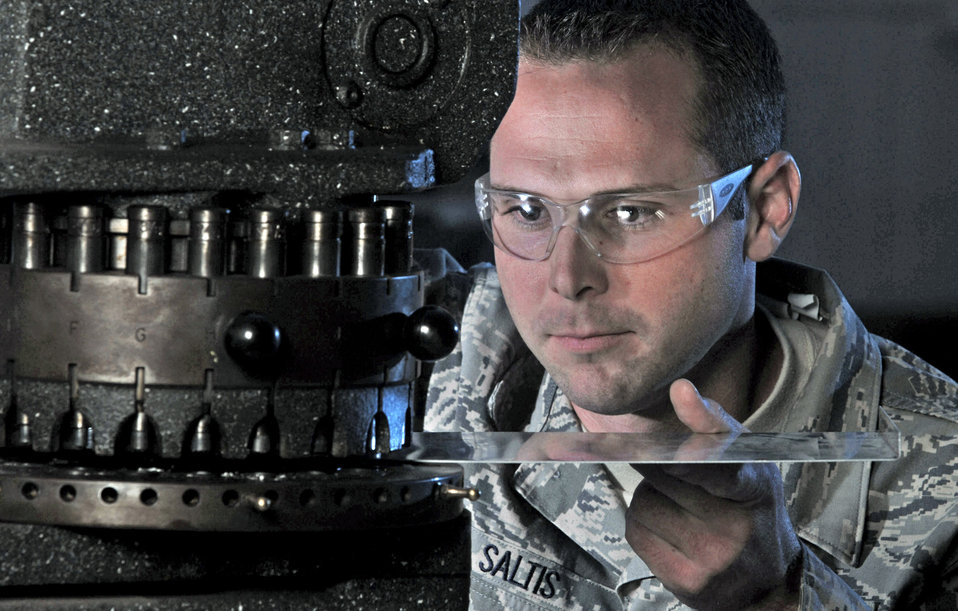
Metal mania

Senior Airman Jarrod Saltis aligns a rotex punch while fabricating a door panel for a C-17 Globemaster III cargo aircraft Nov. 28 at March Air Reserve Base, Calif. In addition to being the home of the Air Force Reserve Command's largest air mobility wing, the base hosts units from the Army, Navy and Marine Corps Reserve, and the Air National Guard. Airman Saltis is an aircraft structural maintenance technician from the 452nd Maintenance Squadron.